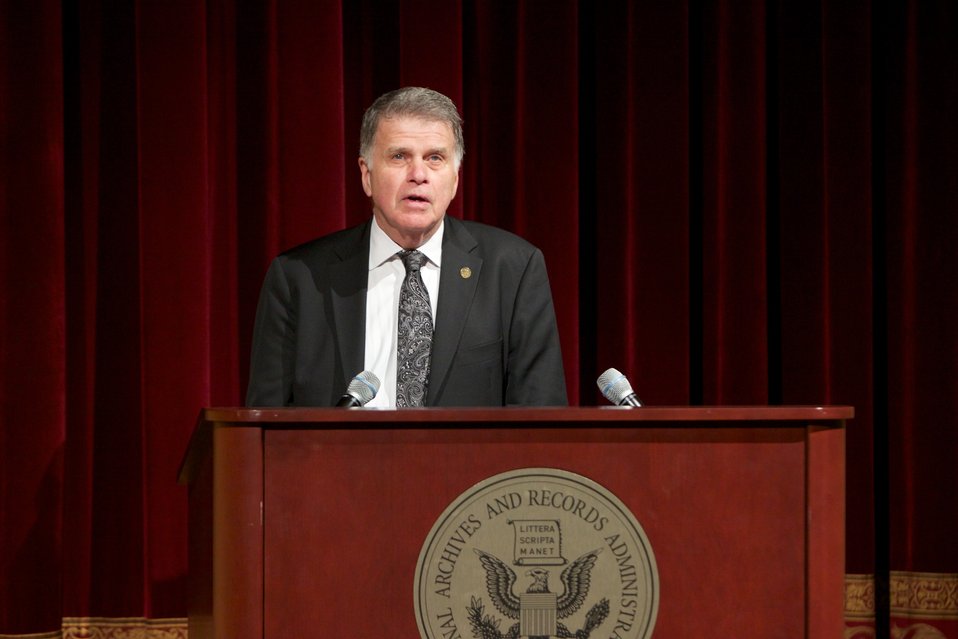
The Monuments Men; David S. Ferriero, Archivist of the United States, provides opening remarks